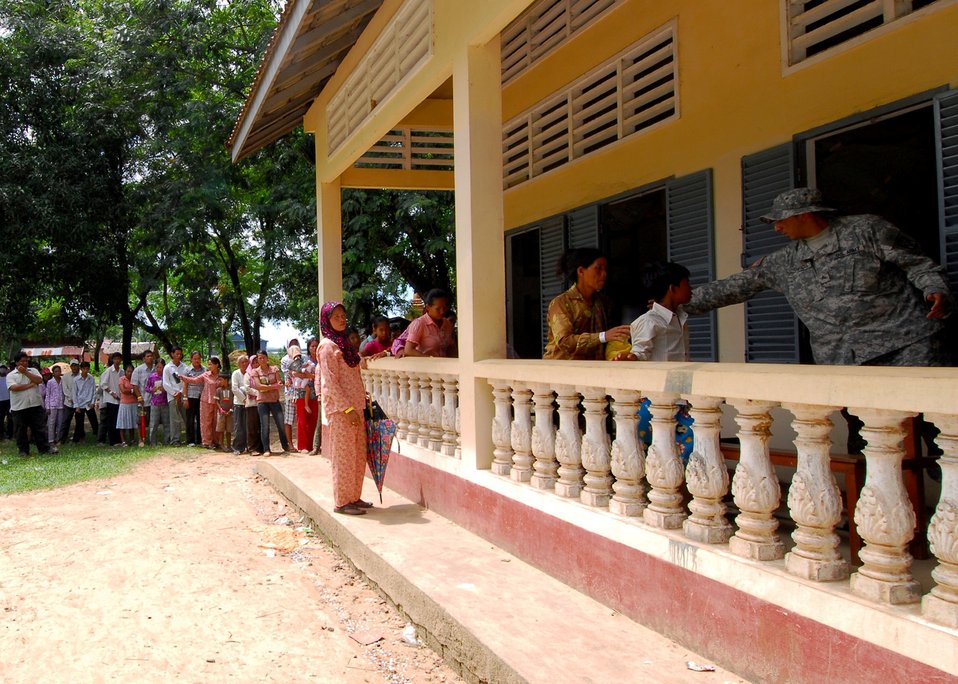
U.S. Army Sgt. John Garcia directs patients to the pharmacy to receive medication on June 24, 2010, in Sihanoukville, Cambodia, during a medical civic action event. The Military Sealift Command hospital ship USNS Mercy (T-AH 19) is in Cambodia in support of Pacific Partnership 2010.